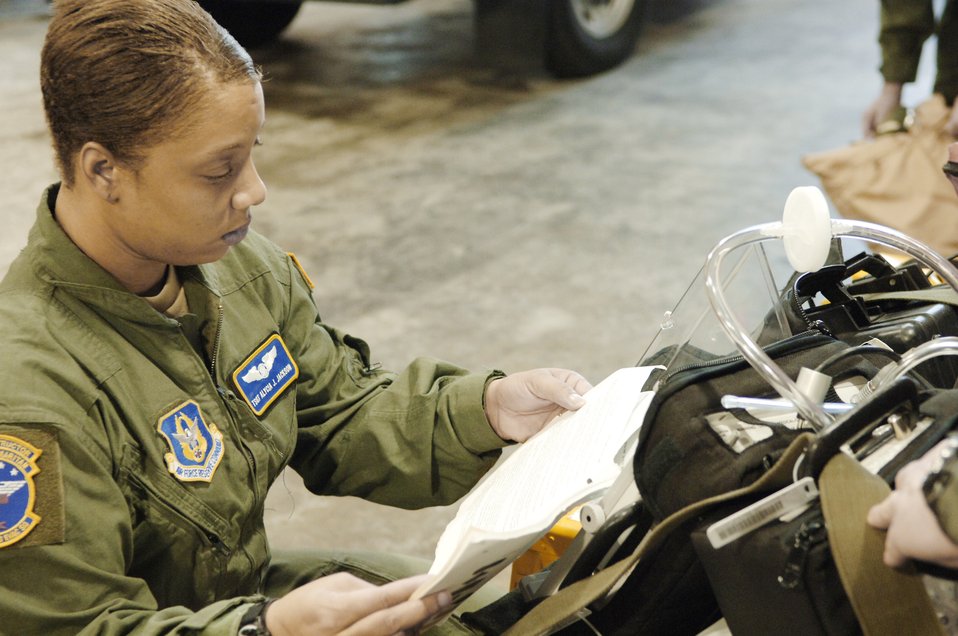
Air Force 'angels' rescue injured Haitians

Tech. Sgt. Alycia Jackson inspects medical equipment before boarding a C-130 Hercules Jan. 22, 2010 bound for Haiti. The crew from Dobbins Air Reserve Base, Ga., transported 48 Haitian nationals including 18 urgent-care patients and four critical-care patients. Sergeant Jackson is assigned to the 94th Aeromedical Evacuation Squadron.